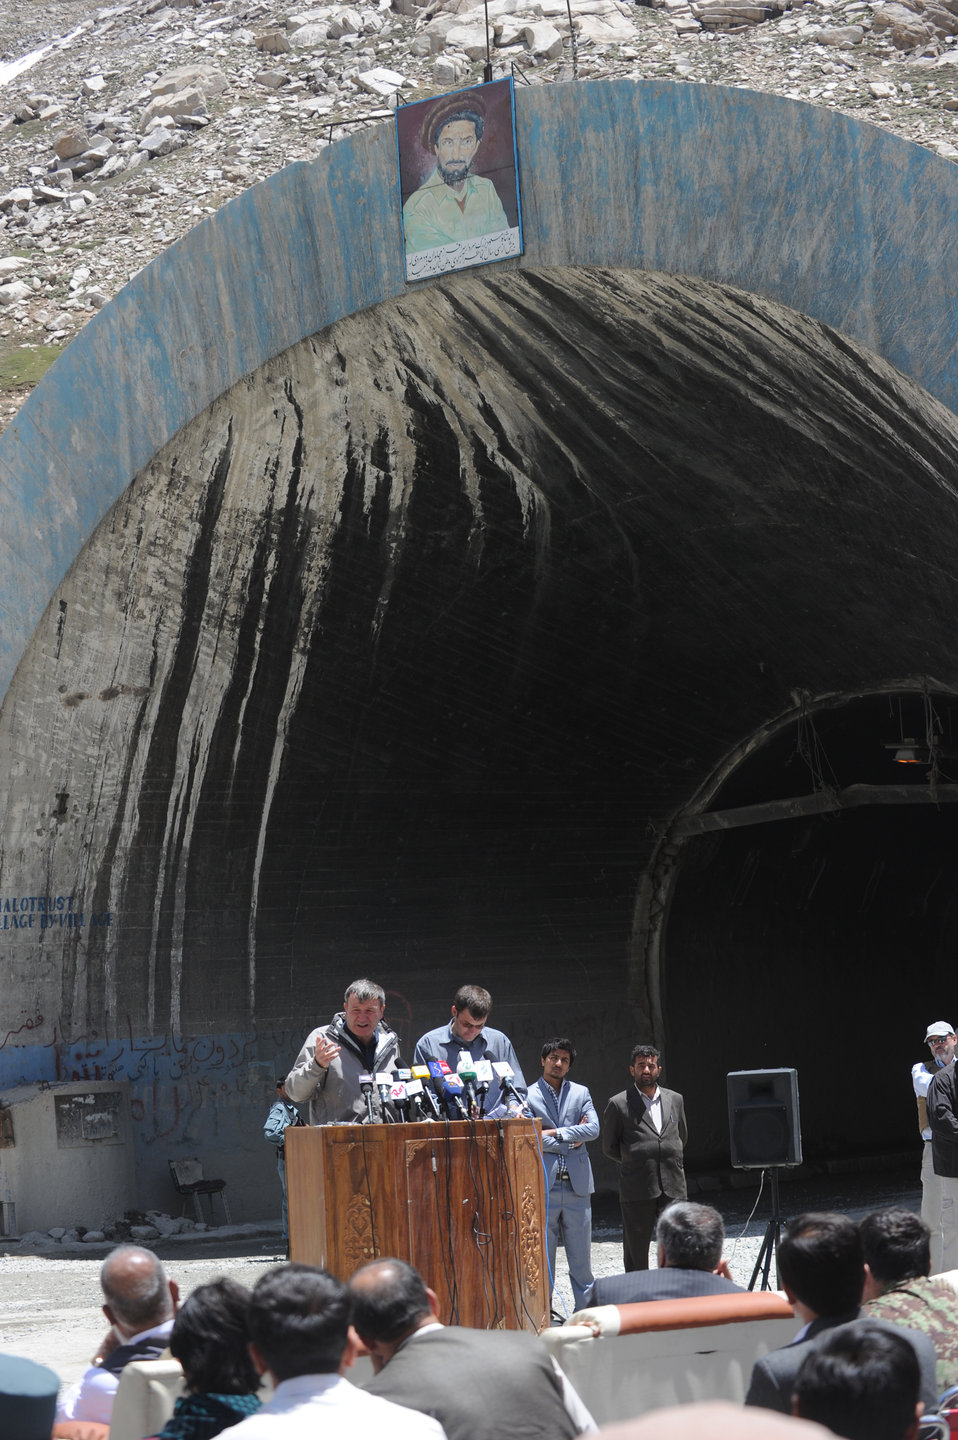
U.S. Ambassador Karl W. Eikenberry makes remarks during a ceremony to mark the beginning of renovations at the Salang Tunnel on the border of Parwan and Baghlan Provinces, Afghanistan, on Wednesday, June 15, 2011. (S.K.Vemmer/Department of State)